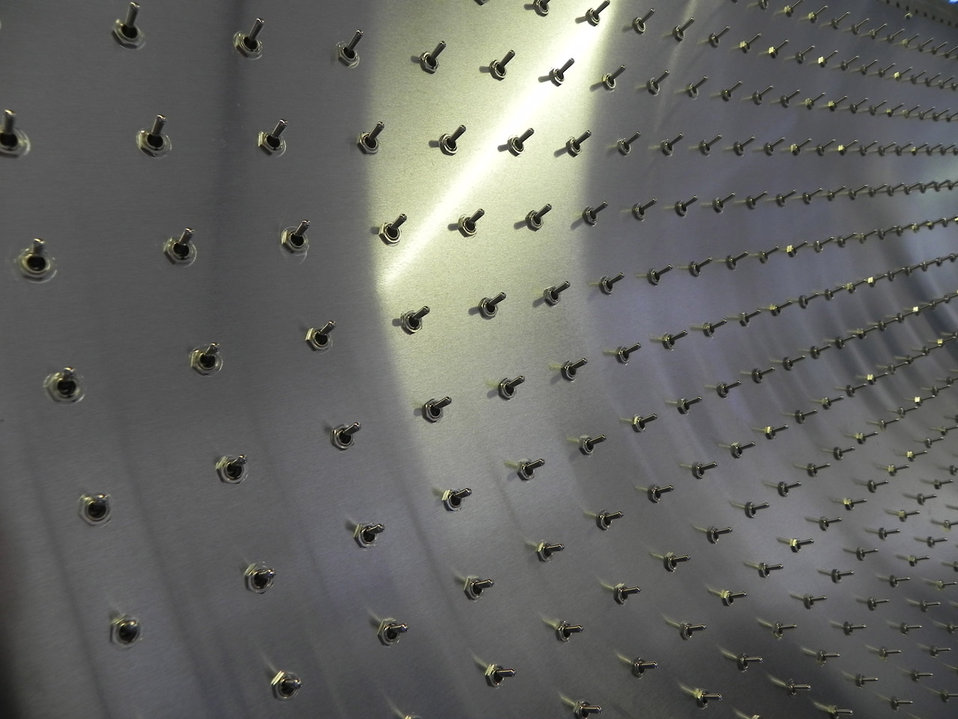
Switch panel front (2)

Switches in a matrix on electrical test panel viewed from front.